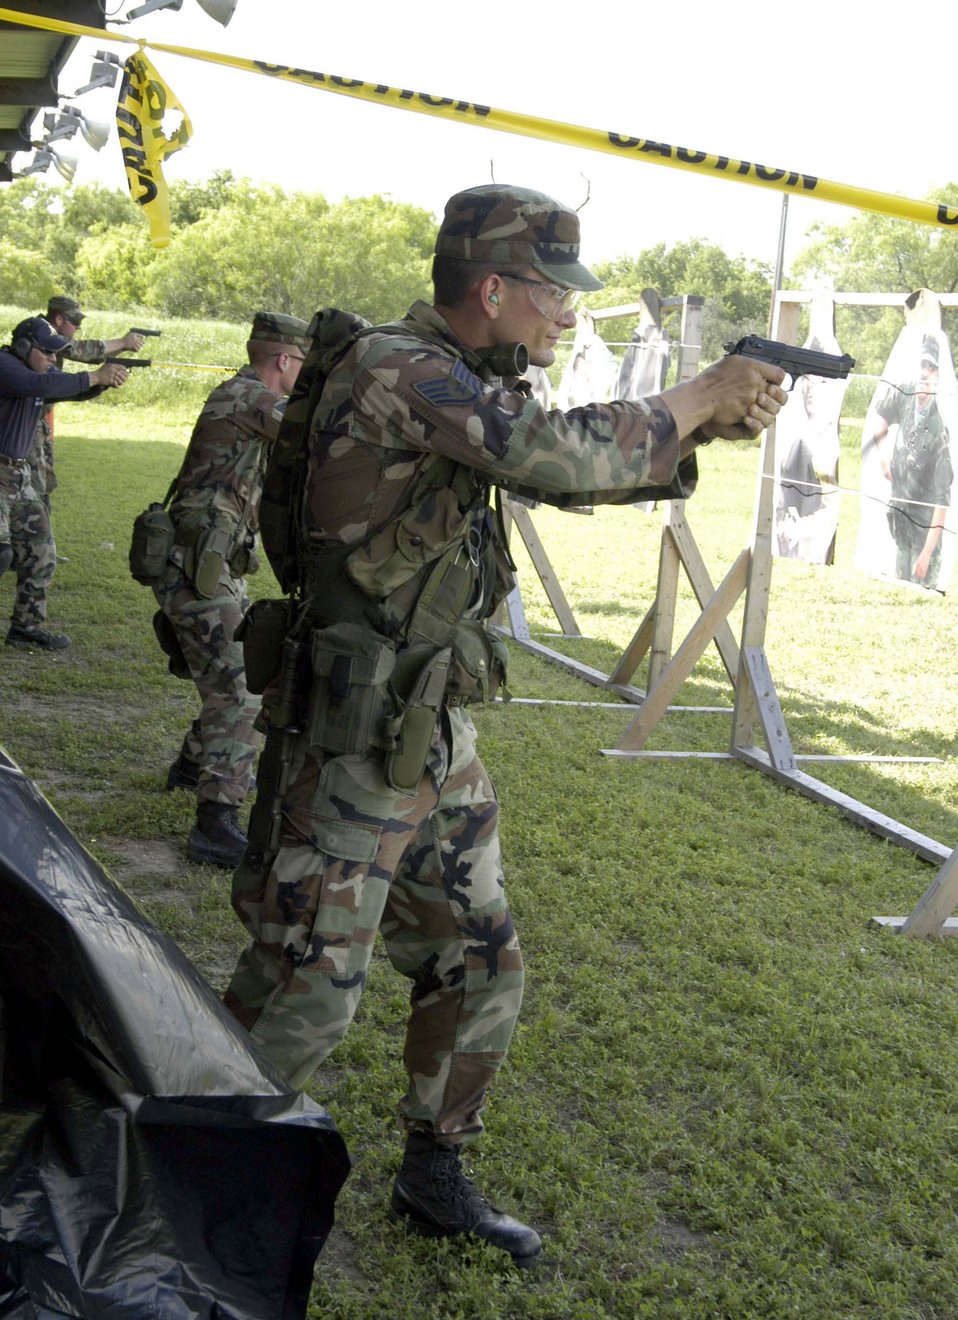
Taking aim

LACKLAND AIR FORCE BASE, Texas -- Staff Sgt. Jack Gilbert fires his 9 mm pistol at a practice session during the Air Education and Training Command Combat Weapons and Tactics Course here. He is a combat arms instructor with the 342nd Training Squadron.